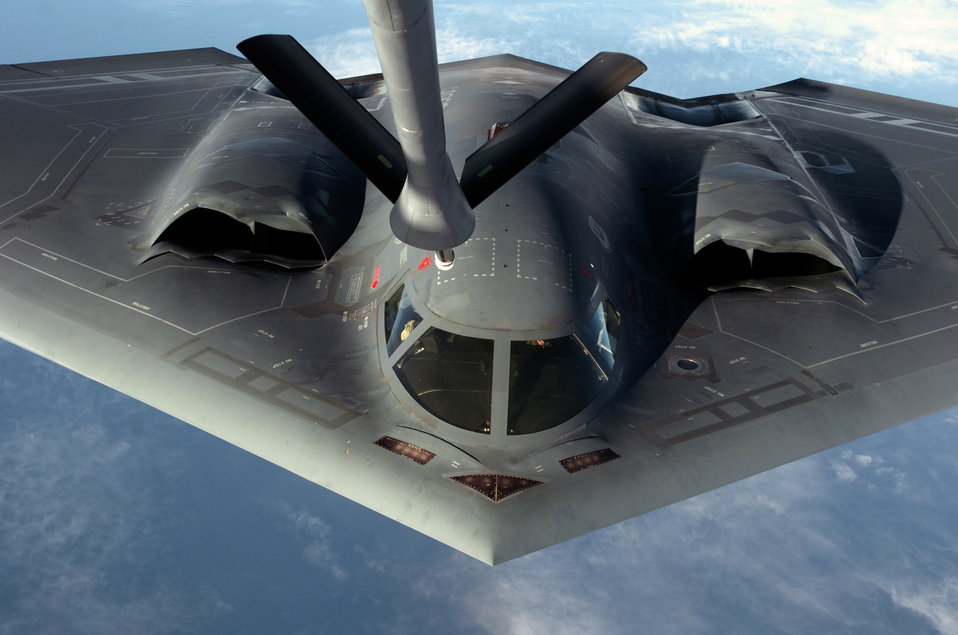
Fuel the Spirit

OVER THE PACIFIC OCEAN -- A B-2 Spirit bomber prepares to refuel from a KC-135 Stratotanker during a deployment to Andersen Air Force Base, Guam. The bomber deployed as part of a rotation that has provided U.S. Pacific Command officials a continuous bomber presence in the Asia-Pacific region, enhancing regional security and the U.S. commitment to the Western Pacific. The Spirit is from the 509th Bomb Wing at Whiteman AFB, Mo. The Stratotanker is assigned to the Illinois Air National Guard's 126th Air Refueling Wing at Scott AFB.